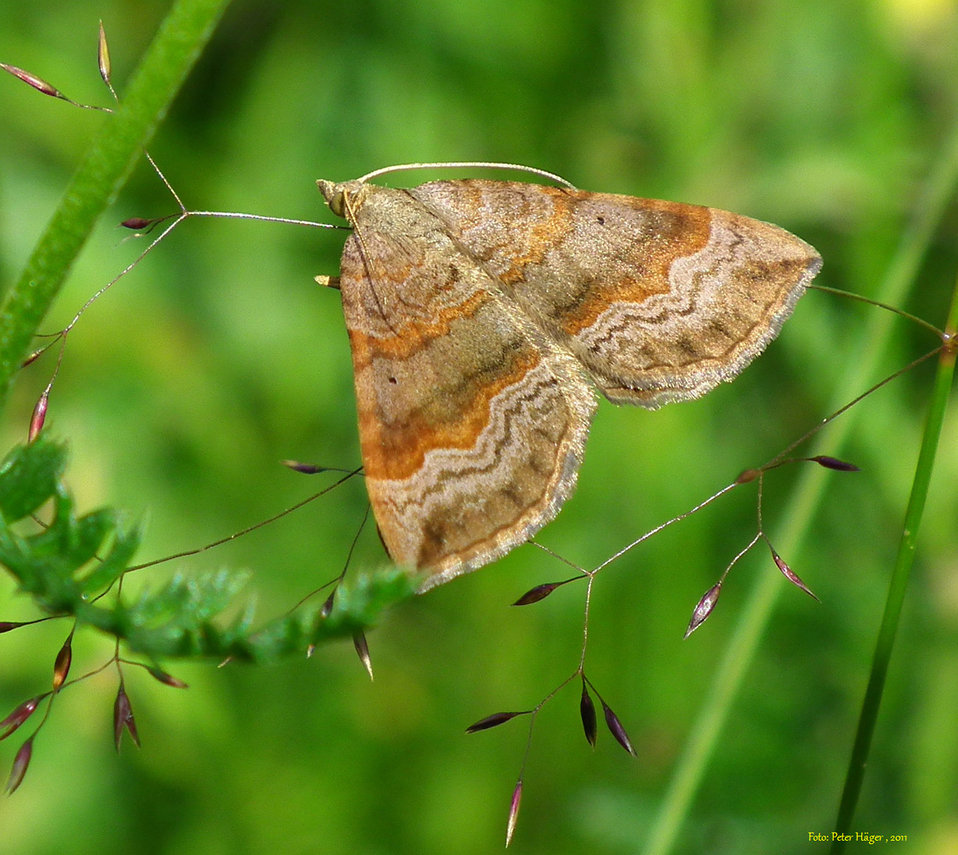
Butterfly

Small brown striped butterfly.